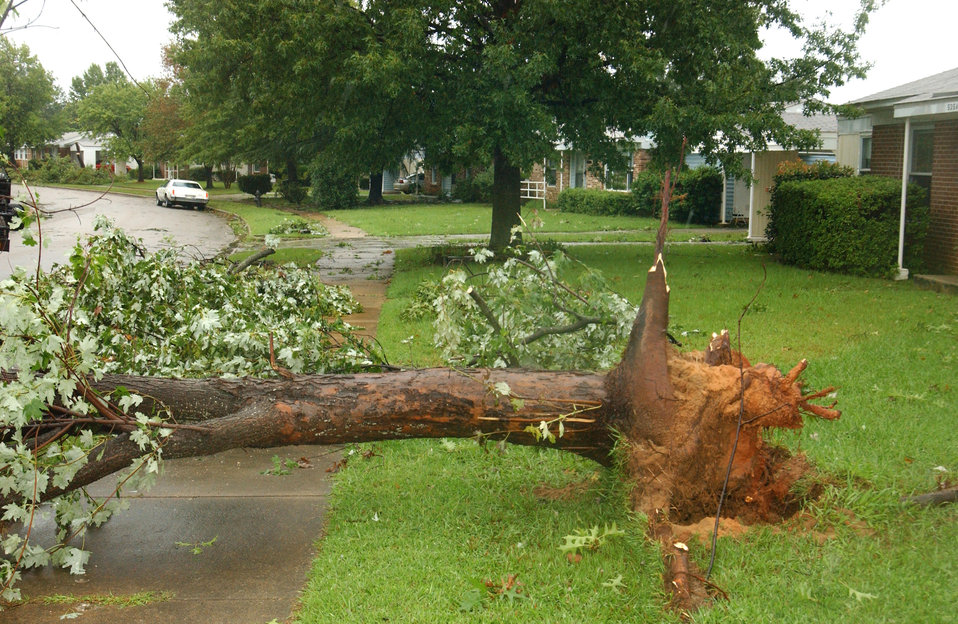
Tornado blows through Shaw

SHAW AIR FORCE BASE, S.C. -- An uprooted tree sits in front of a housing unit here following a tornado with winds at about 103 mph that touched down Sept. 7. The tornado damaged homes, power lines, trees and vehicles here. Multiple tornados stemming from Hurricane Frances touched down throughout the state. No one on base was injured.